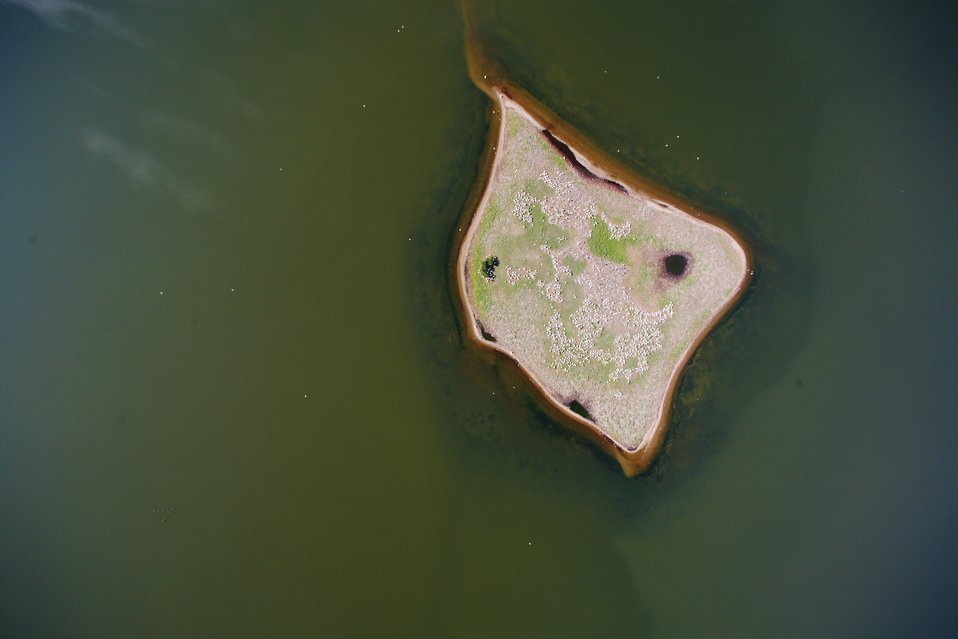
Aerial view of smaller nesting island

One of three nesting islands on Chase Lake National Wildlife Refuge in North Dakota.